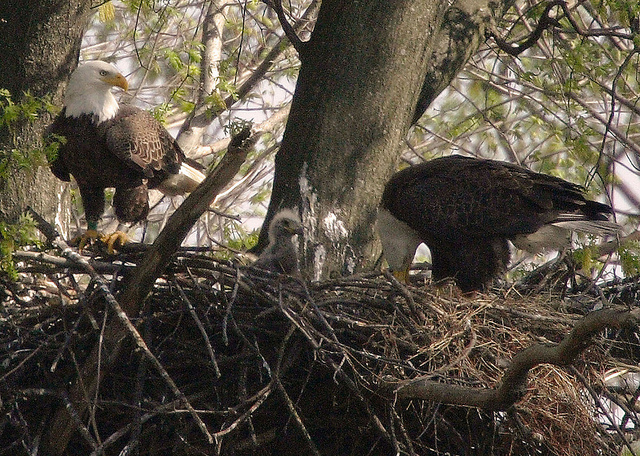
bald eagle father feeding his chicks

John Heinz National Wildlife Refuge